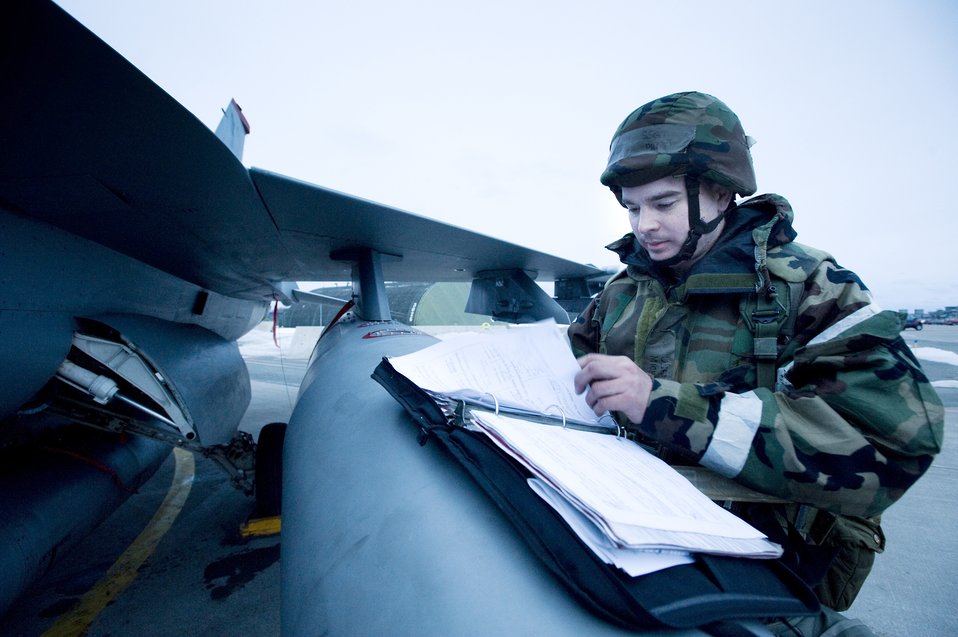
Misawa operations after dark

Staff Sgt. Michael Pratt reviews maintenance paperwork for an F-16 Fighting Falcon on the flightline at Misawa Air Base, Japan, during an operational readiness exercise Feb. 1, 2010. By keeping accurate documentation, Sergeant Pratt makes it possible for the next shift of crew chiefs to pick up where he left off. Sergeant Pratt is with the 14th Aircraft Maintenance Unit.